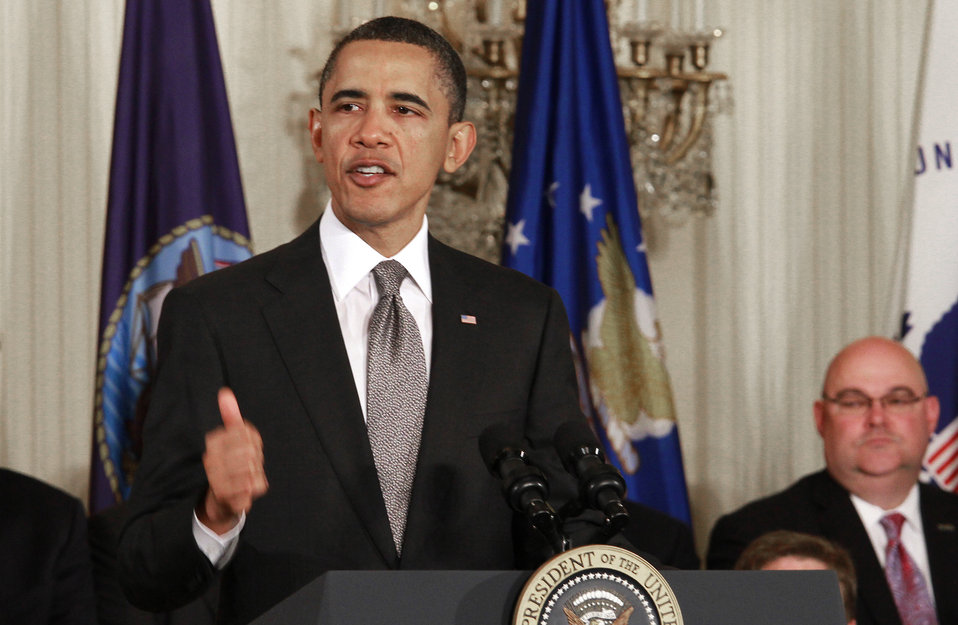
President Obama

President Barack Obama speaks at the launch of